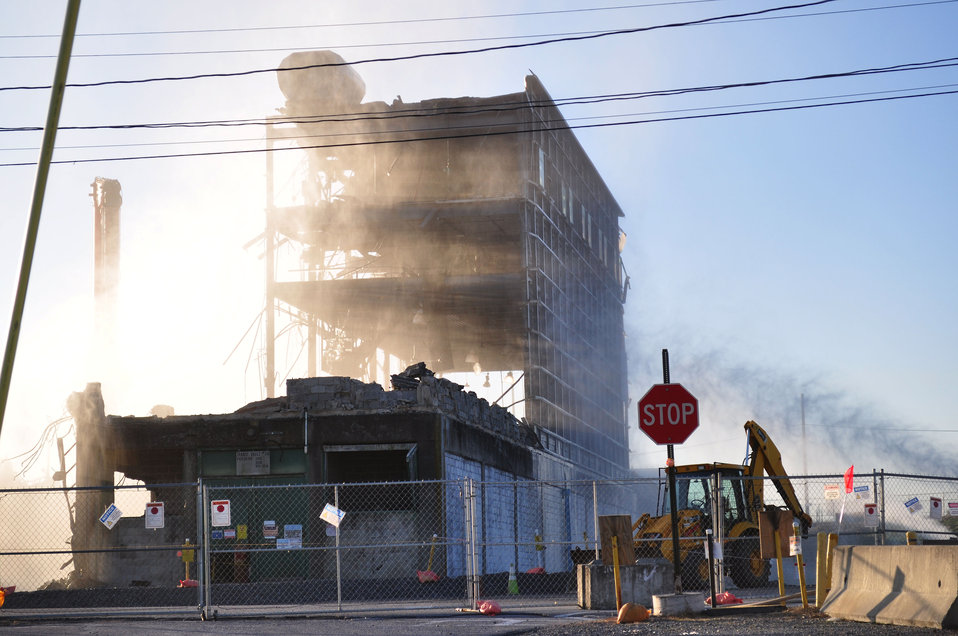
5

K-25 North Tower